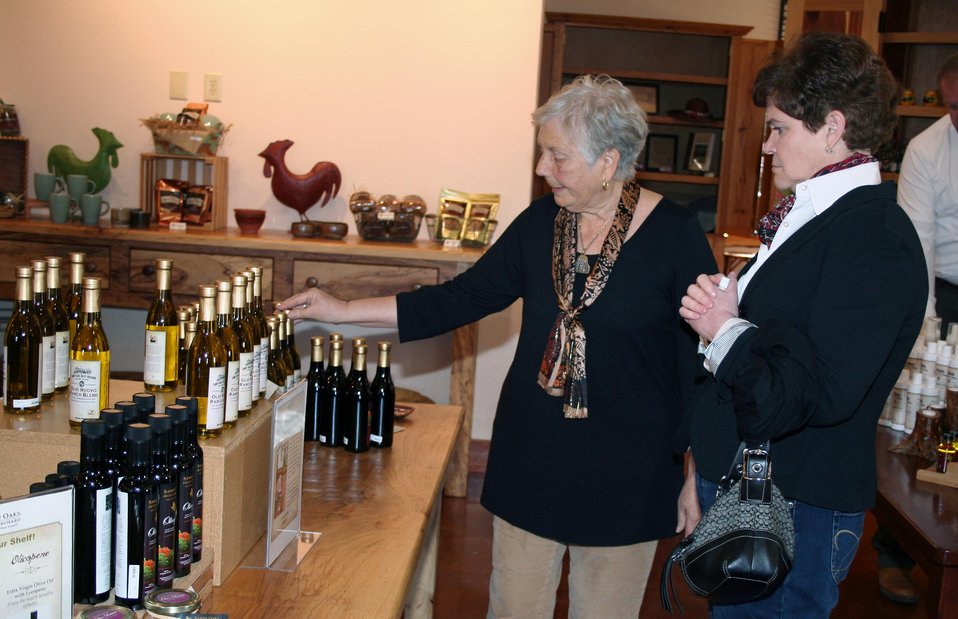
Agriculture Deputy Secretary Krysta Harden looks over olive oil produced by Sandy Oaks Olive Orchard owner Sandy Winokur in Elemendorf TX on Friday, Feb. 28, 2014.